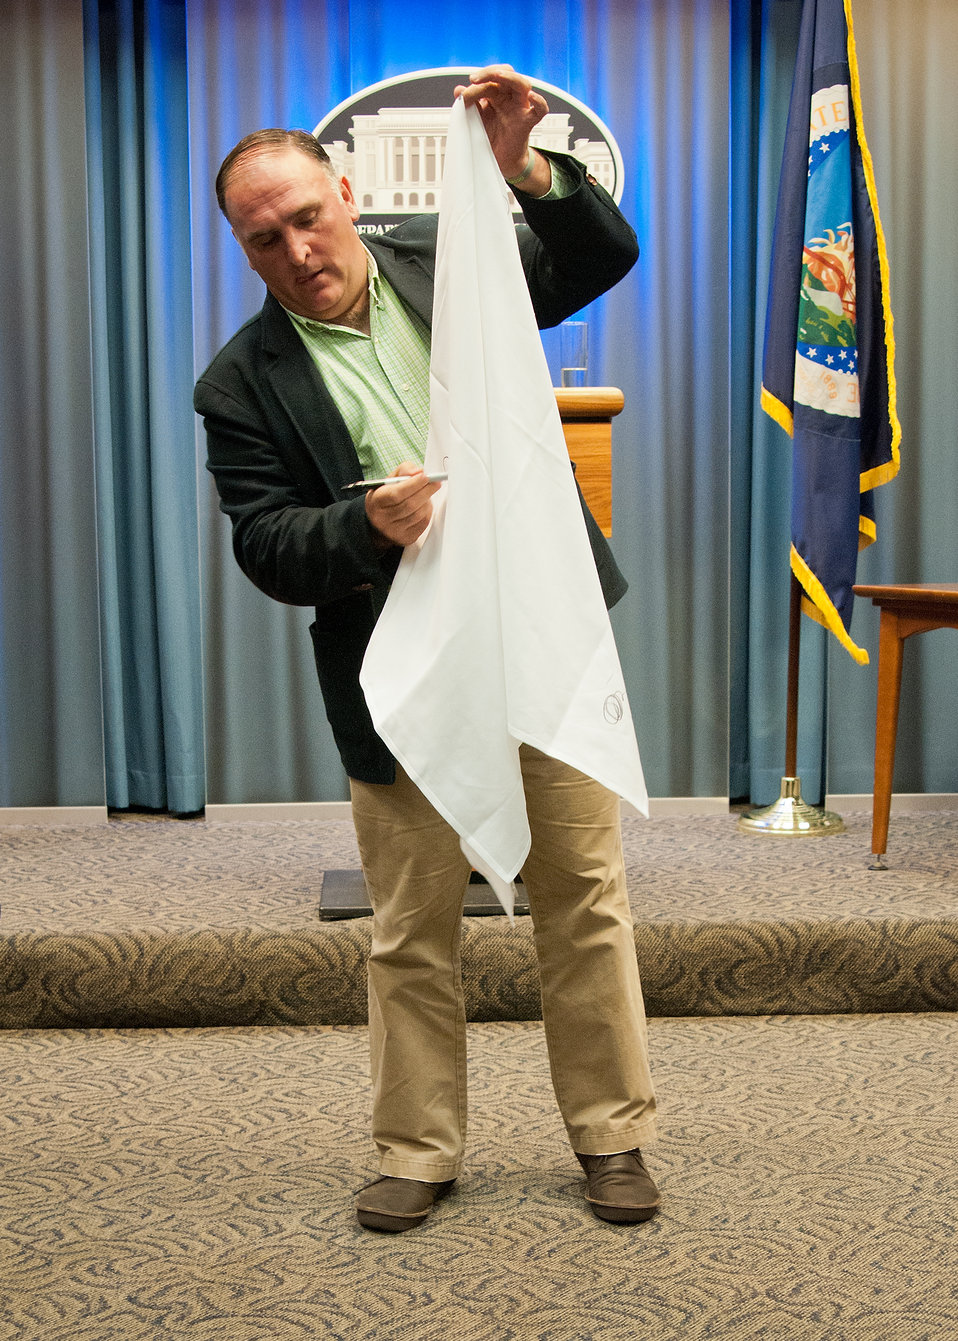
Chef Jose Andres, Chef/Owner, Think Food Group the guest speaker at the kick-off meeting of the United States Department of Agriculture White House Liaison Weekly Political Appointee Meeting for the New Year in Washington, DC, Thursday, January 20, 2012. Chef Andres used a tablecloth to demonstrate the traditional organizational chart and how to better utilize the structure of the chart.